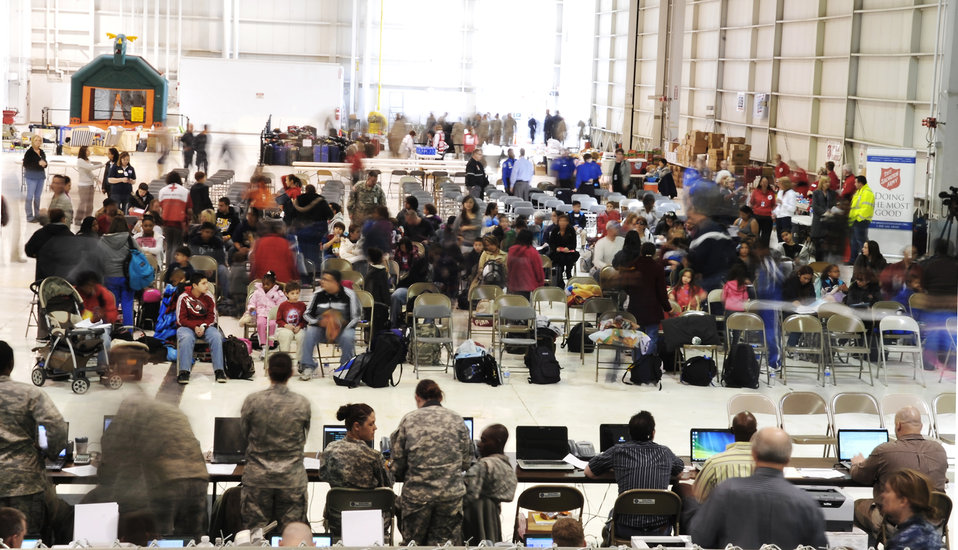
Military family members arrive

Military family members arriving from Japan begin their inprocessing March 24, 2011, in Denver. Family members voluntarily evacuated from Japan due to the recent natural disaster.